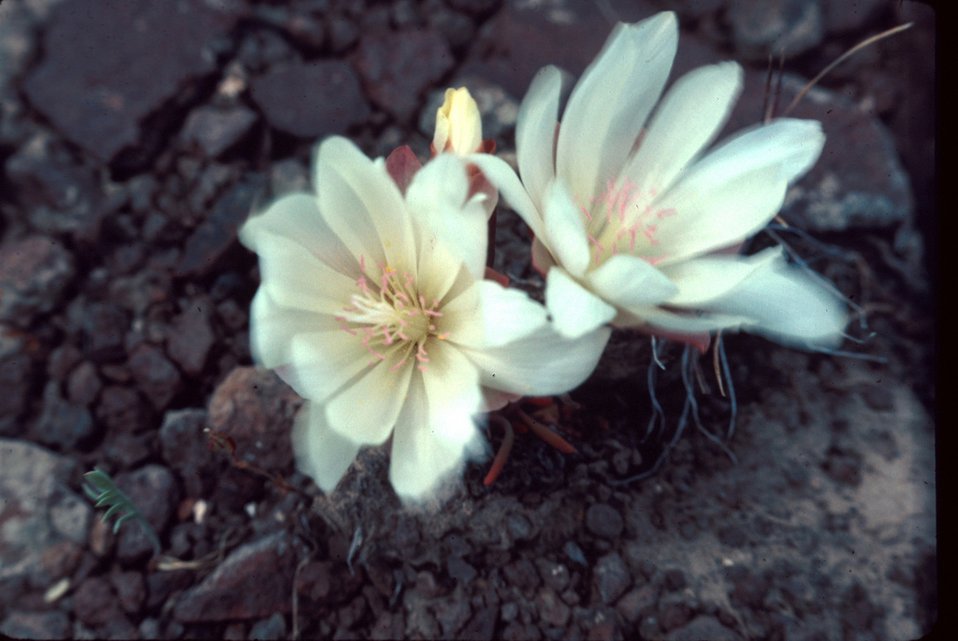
Bitteroot Lewisia redivia Wildflower